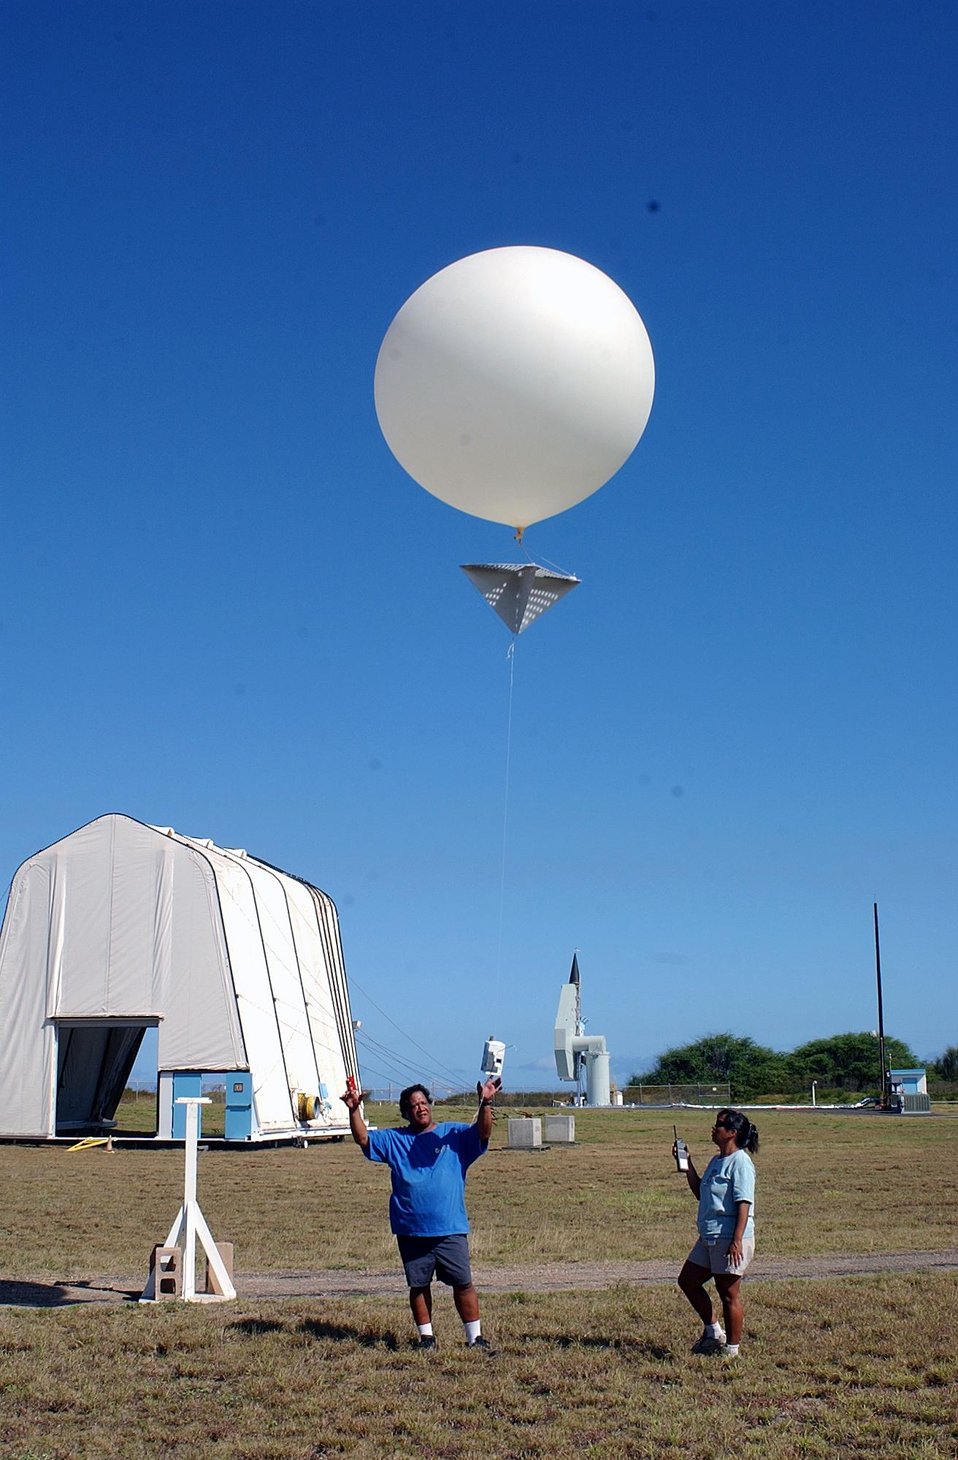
PRIOR TO A LAUNCH A FINAL WEATHER BALLOON IS LAUNCHED, PAD 1 IS IN THE BACKGROUND.

SANDIA'S KAUAI TEST FACILITY, OPERATED FOR DOE, IS ON THE U.S. NAVY'S PACIFIC MISSILE RANGE FACILITY ON THE ISLAND OF KAUAI, HAWAII. WEATHER BALLOONS ARE EQUIPPED WITH REFLECTORS AND LOCATORS THAT ALLOW SCIENTISTS TO TRACK THEM UNTIL THEY EXPAND AND FINALLY POP, AT ABOUT 12,000 FEET. SANDIA SCIENTISTS AND TECHNICIANS AT KTF, CONDUCT ROCKET FLIGHT TEST EXPERIMENTS RANGING FROM OFFENSIVE AND DEFENSIVE WEAPONS TESTING TO ATMOSPHERIC STUDIES AND HIGH TECH STAR GAZING.